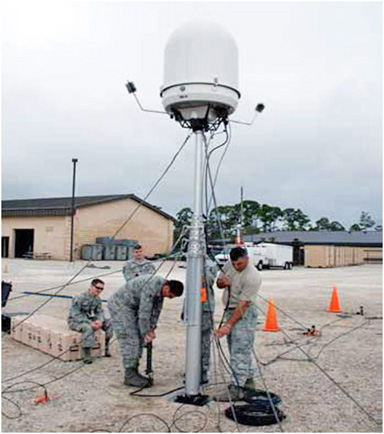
Improved weather technology on the way to warfighters

Airmen set up a portable Doppler radar system. The Electronic Systems Center is working to bring the improved capabilities the system offers to warfighters.